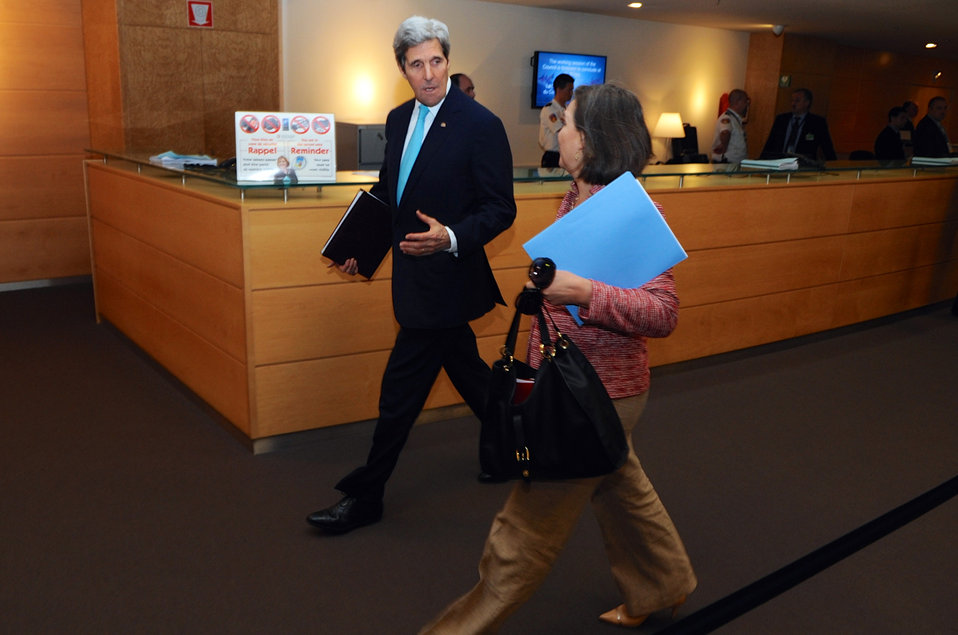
Secretary Kerry, Assistant Secretary Nuland Arrive for NATO Ministerial Meetings

U.S. Secretary of State John Kerry and Assistant Secretary for European and Eurasian Affairs Toria Nuland arrive at NATO Headquarters in Brussels, Belgium, for ministerial meetings on April 1, 2014.